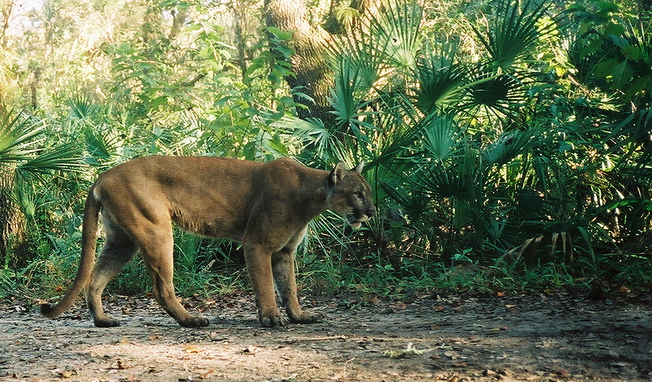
Florida panther

endangered
Florida Panther National Wildlife Refuge, FL
Trail camera photo by the Florida Fish and Wildlife Commission